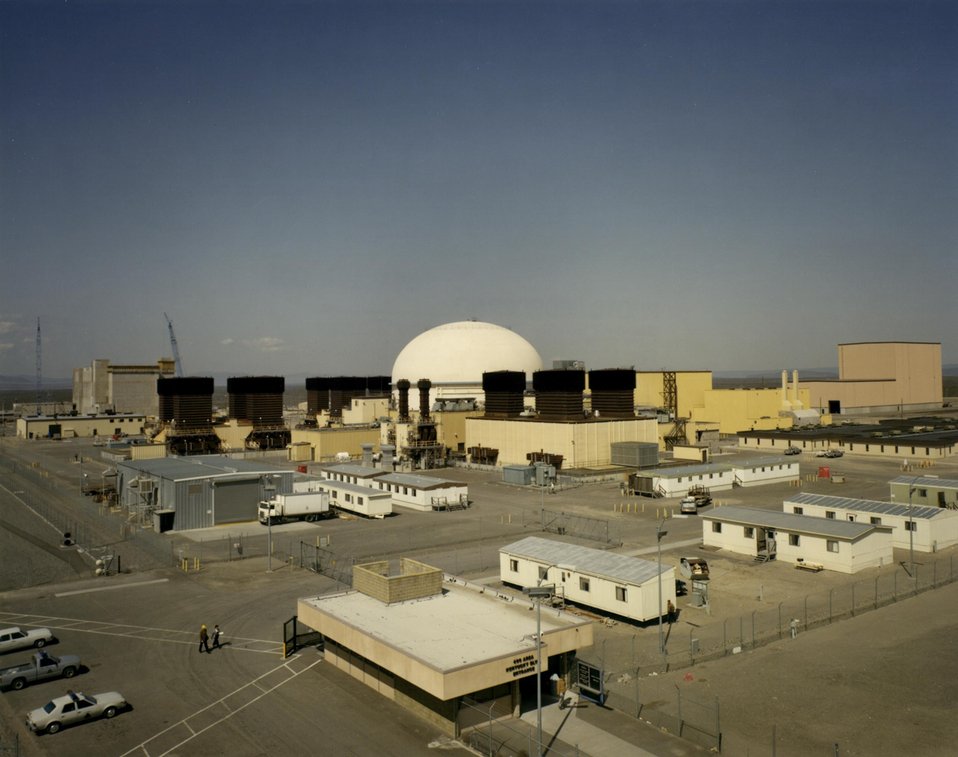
VIEW OF FFTF LOOKING TOWARD THE NORTHWEST.

THE FFTF IS A 400 MEGAWATT (THERMAL) SODIUM COOLED FAST FLUX REACTOR DESIGNED SPECIFICALLY FOR IRRADIATION TESTING OF FUEL AND COMPONENTS. ALTHOUGH ENGINEERED FOR THE TEMPE- RATURES AND CORE FUEL CHARCTERISTICS OF FAST BREEDER RE- ACTORS, THE FFTF NEITHER 'BREEDS' PLUTONIUM NOR PRODUCES ELECTRICITY. SAMPLES OF NUCLEAR FUELS, METALS, AND OTHER BREEDER REACTOR MATERIALS ARE PLACED IN THE REACTOR CORE TO DETERMINE THE REACTION TO IRRADIATION. THE FFTF ACHIEVED FULL POWER ON DECEMBER 21, 1980.